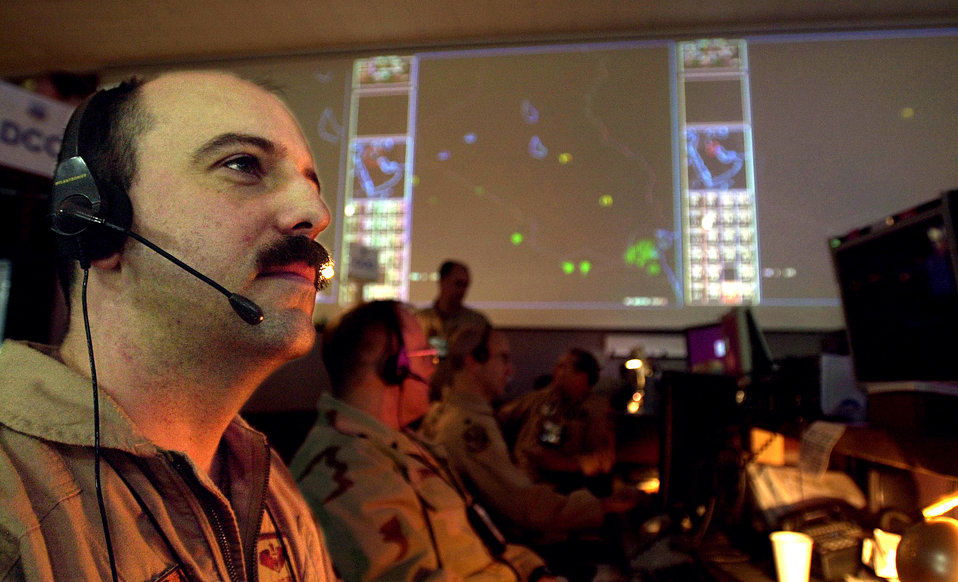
CAOC nerve center for air operations

SOUTHWEST ASIA (AFPN) -- Maj. Chris Holinger tracks an ongoing Operation Southern Watch mission inside the Combined Air Operations Center at a forward-deployed base. Spanning nearly 30,000 square feet, the CAOC is the nerve center for all U.S. Central Command air operations.

With crews operating around the clock, CAOC officials plan, control and track all coalition missions throughout the region. They also direct time-sensitive targeting, battlefield coordination, theater missile defense, joint search and rescue, special operations support and other mission critical operations. Holinger is a Joint Surveillance Target Attack Radar System aircraft liaison officer with the 363rd Expeditionary Air Command and Control Squadron. He is deployed from the 116th Air Control Wing at Robins Air Force Base, Ga.